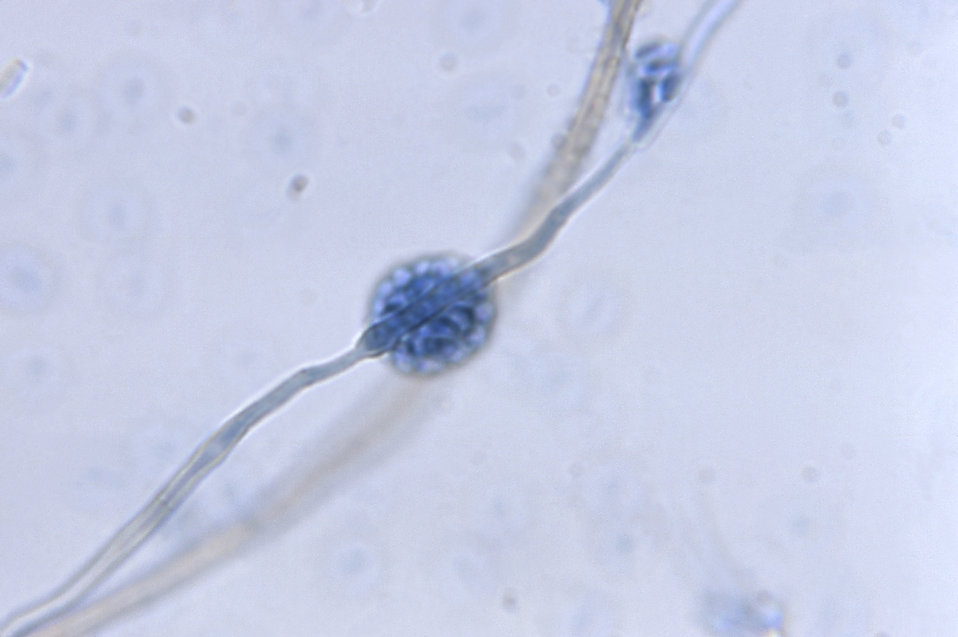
Magnified 1125X, this photomicrograph revealed some of the ultrastructural morphology exhibited by a cluster of Phialophora parasitica fungal conidia that was attached to a conidiophore from which the former structure was derived. Compared to PHIL 10894, which reveals more of the detail associated with the conidial cluster, this image reveals the conidiophore in greater detail.